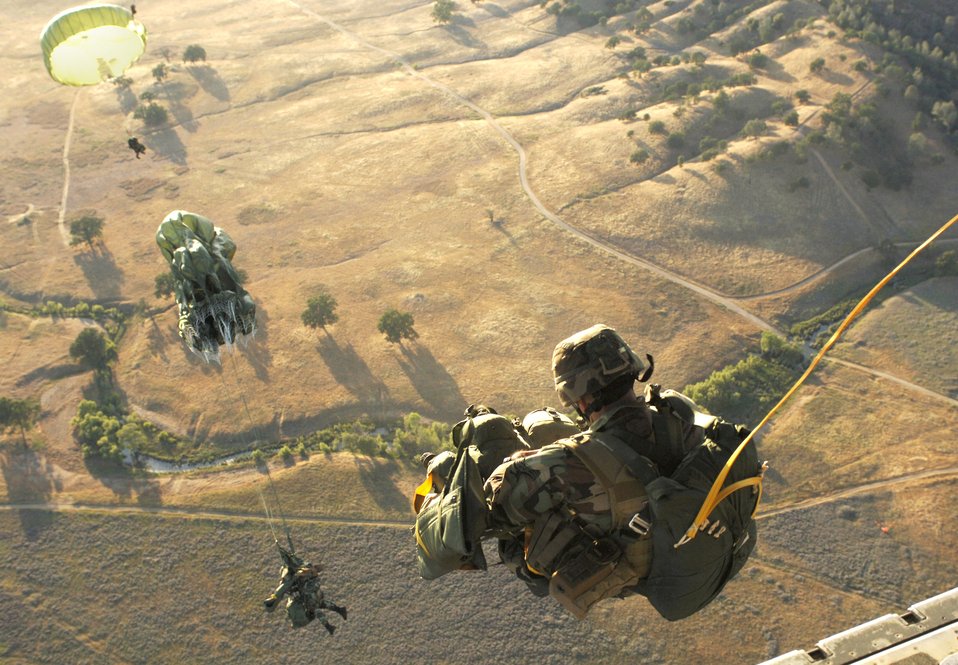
Exercise tests fast-response unit's capabilities

Air Force members jump from a C-130 Hercules June 2 during an airdrop in support of the weeklong exercise Operation Hydra. The Airmen consist of firefighters from the 99th Civil Engineering Squadron at Nellis Air Force Base, Nev., explosive ordinance disposal members from the 1st Civil Engineering Squadron at Langley AFB, Va., and members from the 823rd Red Horse Squadron at Hurlburt Field, Fla. Operation Hydra provides realistic training scenarios, exercising the 615th Contingency Response Wing's ability to conduct expeditionary mobility operations at three locations. The wing is practicing its